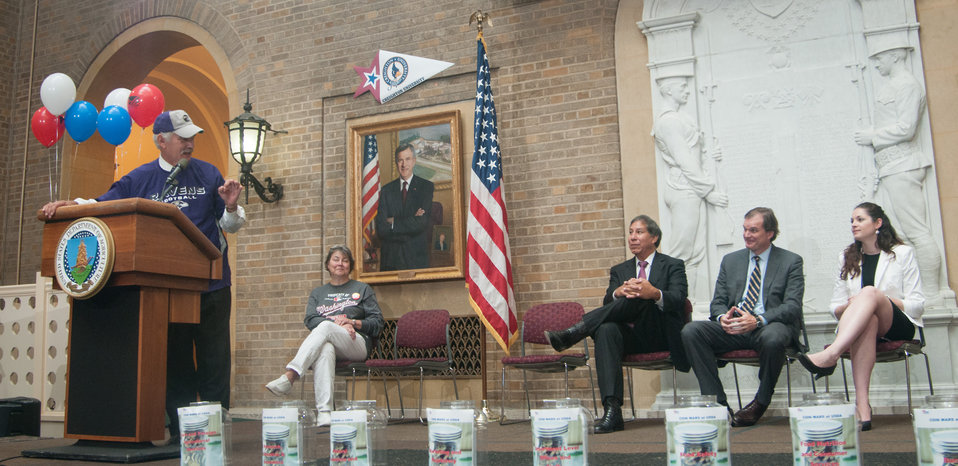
U.S. Department of Agriculture (USDA) Farm and Foreign Agricultural Services Under Secretary and Vice Chair of the USDA CFC Campaign Michael T. Scuse makes opening remarks the 2013 Combined Federal Campaign Opening Ceremony and fund raising event on Tuesday, Sept 17, 2013 in the Whitten Building, U.S. Department of Agriculture (USDA), Washington, D.C. He announced the Coin Wars Challenge where mission areas had containers for coin donations. Pennies were worth positive points and all other coins had negative point values based on their denomination. Those with a competitive nature, could lower the points score of another organization by loading their container with silver coins, and their own organization with pennies. Other event activities attracted employees on personal time to participate in fund raising activities that generated donations and donation registrations that will help support charities. The Combined Federal Campaign (CFC) is the largest and most successful workplace charitable giving drive in the world. CFC is the only authorized charitable organization solicitation of Federal employees in their workplaces. CFC is structured to support and to promote philanthropy through a voluntary program that is cost-efficient and effective in providing all Federal employees the opportunity to impact the CFC charitable interest of their choosing. For more information about CFC, please see www.usda.gov/wps/portal/usda/usdahome?navid=USDA CFC USDA Photo by Lance Cheung.